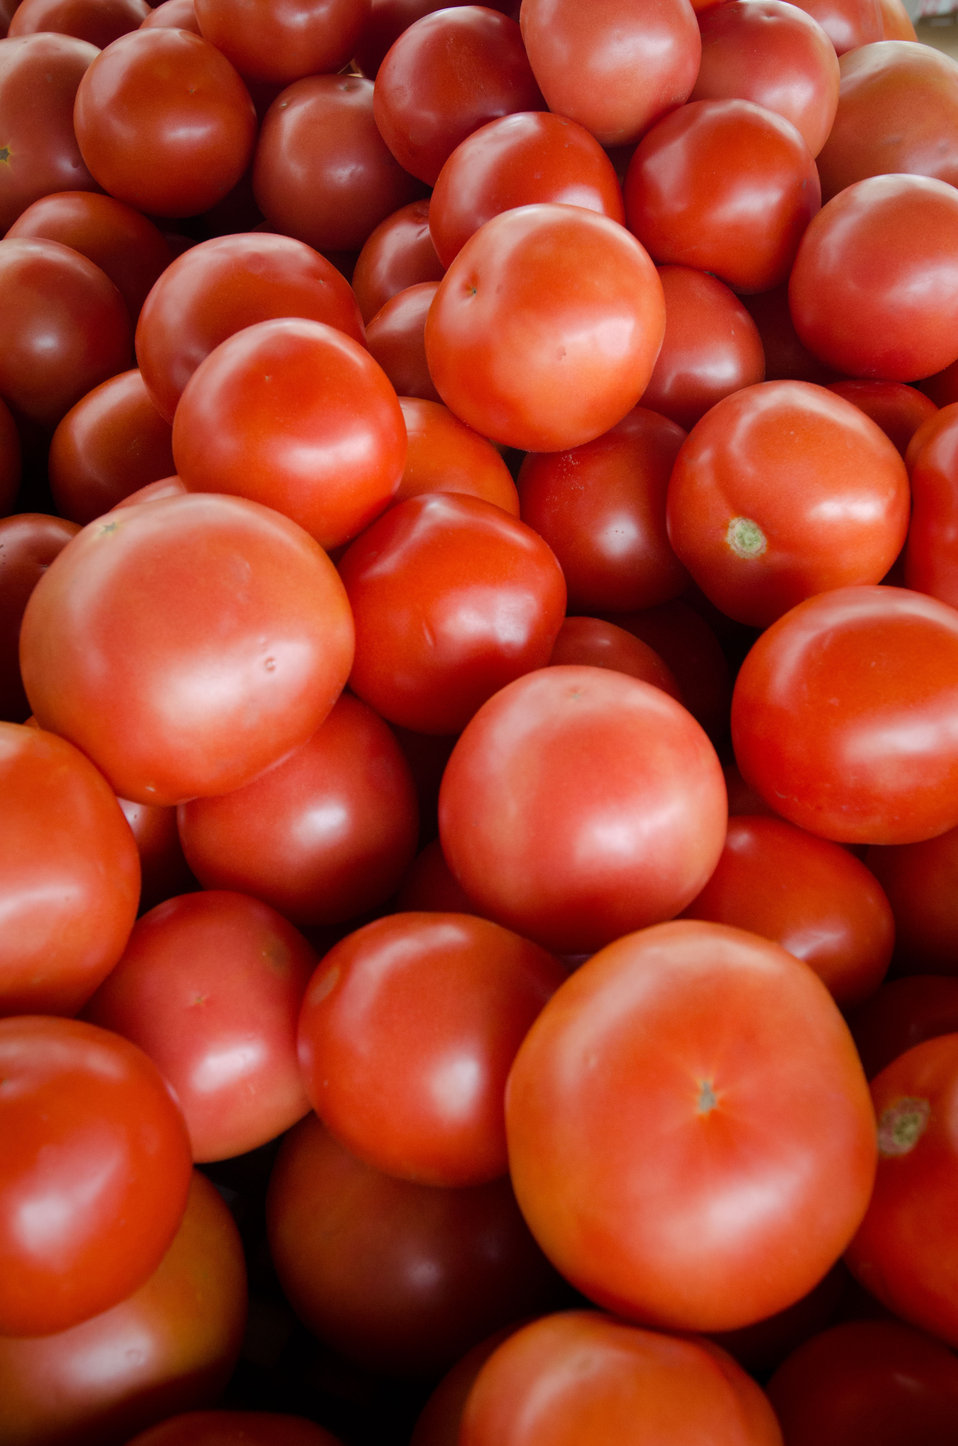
Tomatoes from C & T Produce at the U.S. Department of Agriculture (USDA) summer farmers market opening of the 17th season at the USDA Whitten Building east parking lot in Washington, D.C., on Friday, May 31, 2012. This year's theme is Grow, Healthy, Eat Healthy & Be Healthy. USDA and Fuel Up to Play 60, in partnership with the National Dairy Council and the National Football League, invited residence, visitors and local school children to participate in opening day activities. Hip Hop Public Health featuring Easy A.D. from Cold Crush Brothers and disk jockey Artie Green play music and invite people to get up on stage to dance or hula hoop to get active. D.C. Truck Farm help people know from what plants, that certain herbs, fruit and produce come from by giving tail-gate tours of the garden growing in the bed of their pickup truck. The Peoples Garden Initiative and USDA Executive Master Gardeners gave away a variety of fruit and produce seedlings to include the Tomato ‘Abraham Lincoln’ in celebration of the USDA 150th Anniversary and to share their harvest. New features for 2012 include an on-site sign language interpreter, a hand washing station, and a USDA-certified organic vendor. Other products selling today are fresh fruits, vegetables, herbs, baked goods, meats, kettle popcorn, local honey, hand-made soap and more.